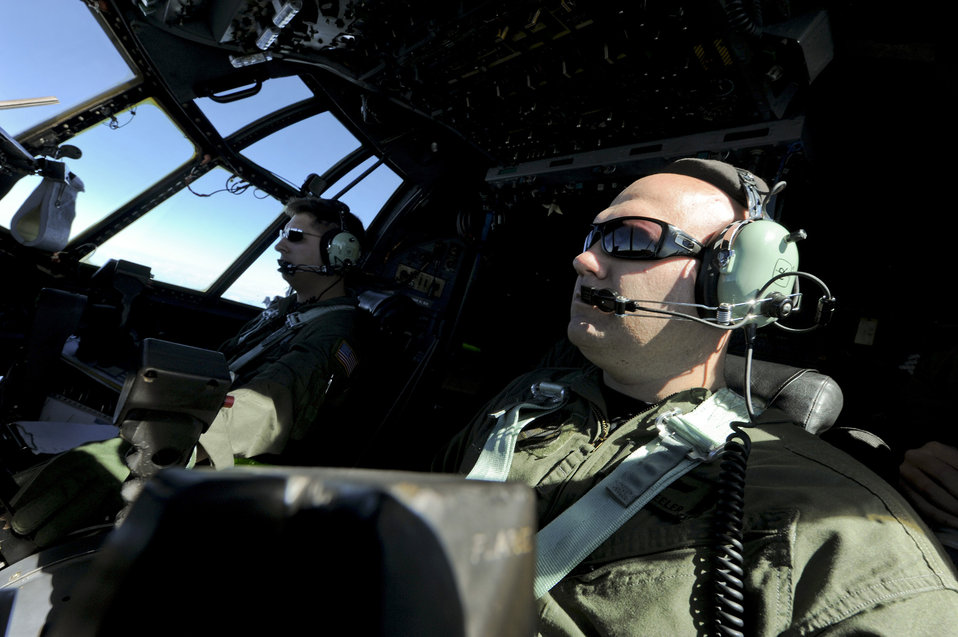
Squadron marks 30 years of honoring fallen comrades

Capt. James Demis (left) and Maj. Darin Wheeler fly an MC-130H Combat Talon II en route to release a wreath Feb. 26, 2011, in memory of fallen brethren lost 30 years ago, when a 1st Special Operations Squadron MC-130E, call sign STRAY 59, crashed during an exercise, killing eight crewmembers and 15 passengers. Captain Demis and Major Wheeler are pilots with the1st SOS.